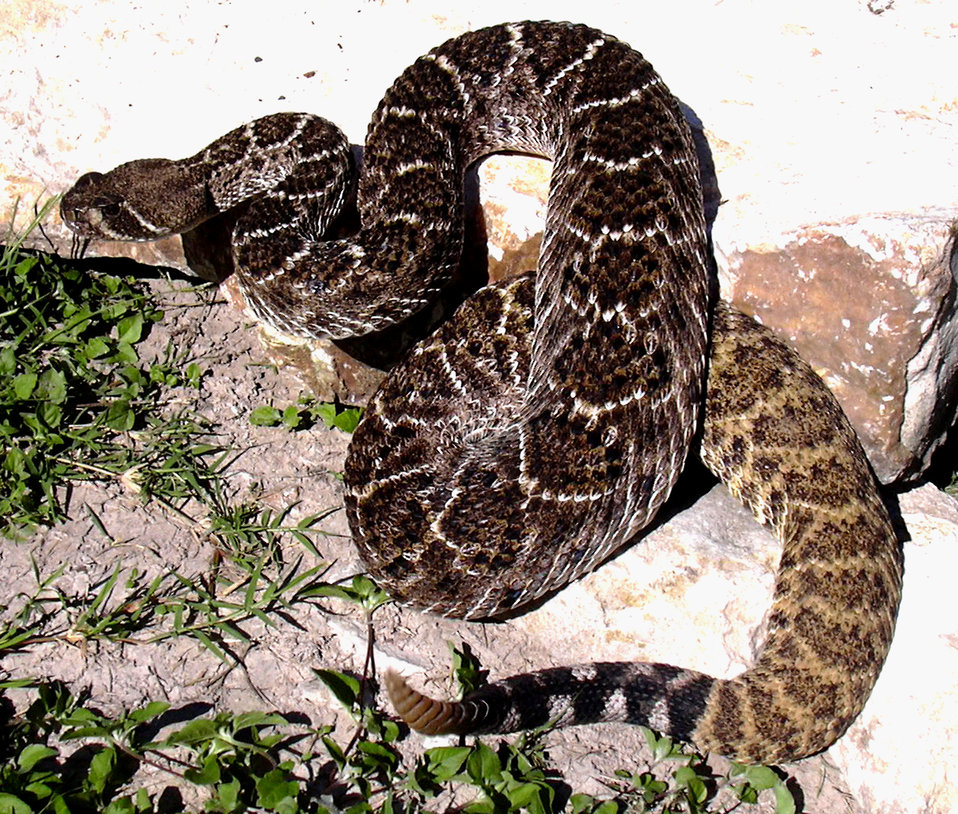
This 'western diamondback' rattlesnake, Crotalus atrox, is a well known, large, gray to rust-colored serpent that is widely distributed across the southwestern to southcentral aspect of the United States, and adjacent Mexico (Klauber, 1997; Campbell and Lamar, 2004). It's abundant along 80% of the Texas Gulf Coast and its barrier islands, as well as the Tamaulipan region along the southern Rio Grande valley (Tennant 1998), placing it in hurricane-prone areas, which is of importance to those living in these regions, and first-responders offering aid to those affected by such a disaster. The average adult size varies considerably across its range. In Starr, Willacy and Hidalgo counties in South Texas, C. atrox commonly grow over 5ft. in length, (Tennant, 1998), and is a highly-excitable, aggressive rattlesnake, responsible for a significant portion of the venomous snake bites, and most of the snakebite fatalities reported in the U. S. each year (Russell, 1980; Gold, 2002).